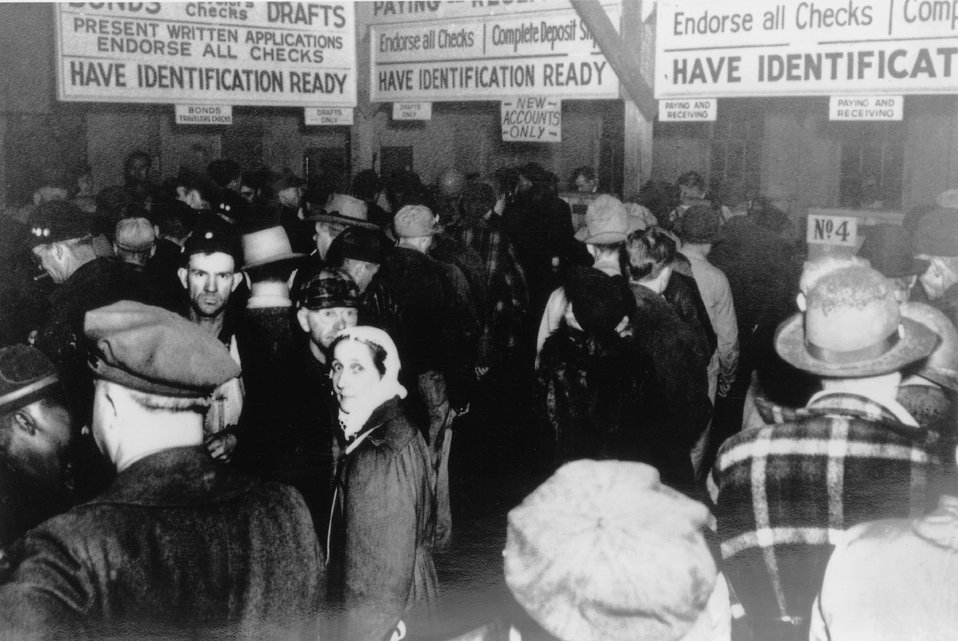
Hanford worker in the NC-11 Bank in the Hanford Construction Camp. c. 1944